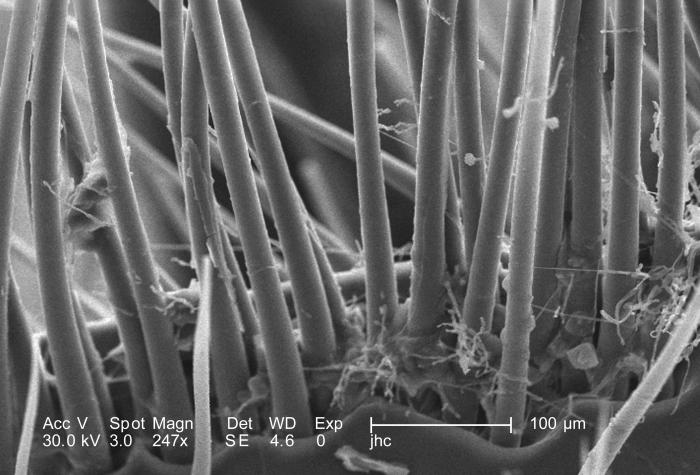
Under a moderate magnification of 247X, which is approximately 4.5X greater than PHIL 10054, this scanning electron micrograph (SEM) depicted some of the exoskeletal morphologic characteristics displayed on the head region of an unidentified beetle found deceased in the suburbs of Decatur, Georgia. In this particular view, there seems to be numerous 'hairs' growing up, out of the organism's exoskeletal surface. These structures are sensorial in nature, and are known as 'setae', providing the insect with information about its environment including thermal changes, changes in wind direction, and the presence of chemicals such as poisons or pheromones. These setae are not composed of keratin, as in the case of mammals, but like the exoskeleton itself, are composed of chitin.